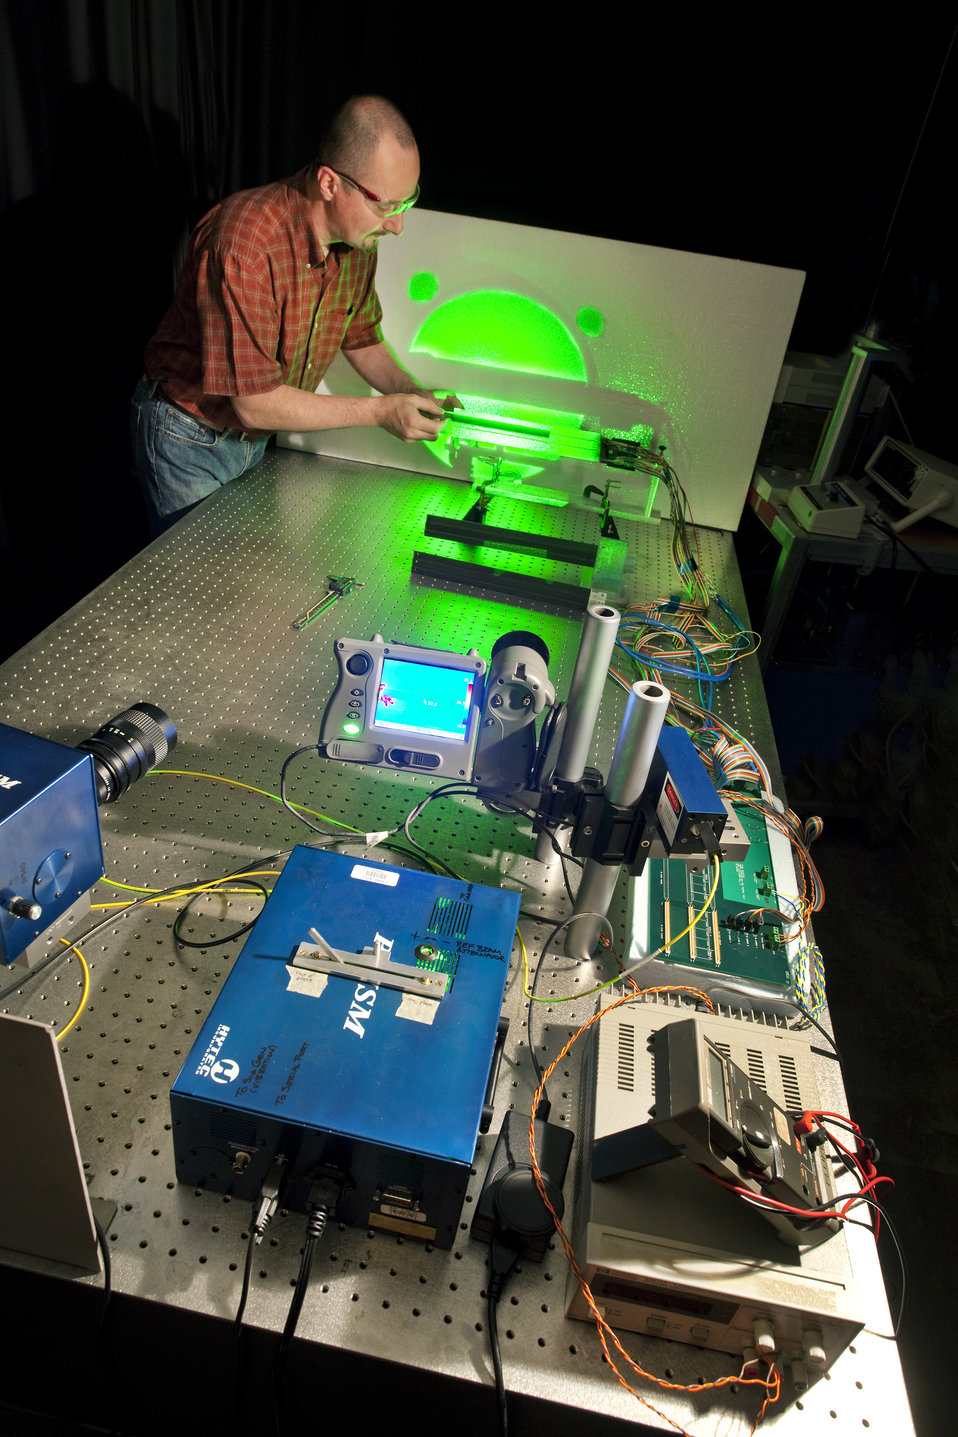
At Lawrence Berkeley National Laboratory, TV holography distortion measurement machine measuring the mechanical distortion produced by heating in a star pixel sector mechanical prototype.